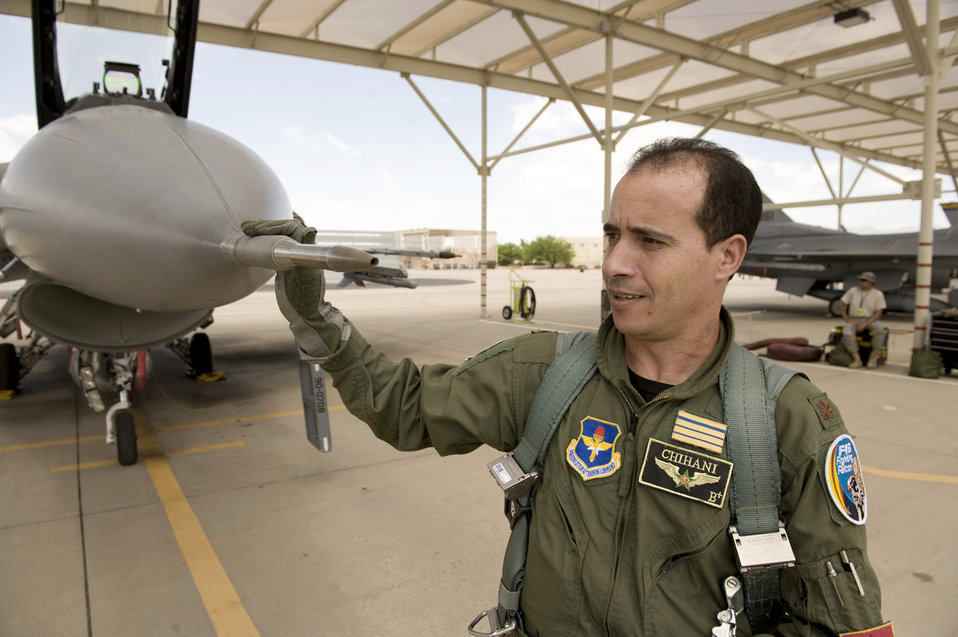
Moroccan F-16s

Royal Moroccan Air Force Maj. Mouloud Chihani performs a preflight check on an F-16 Fighting Falcon at Tucson International Airport, Ariz., before a training mission July 7, 2010. Major Chihani and three other Moroccan pilots are the first F-16 pilots in their air force and will lead the way to establish a new squadron of F-16s when they return home in July 2011.